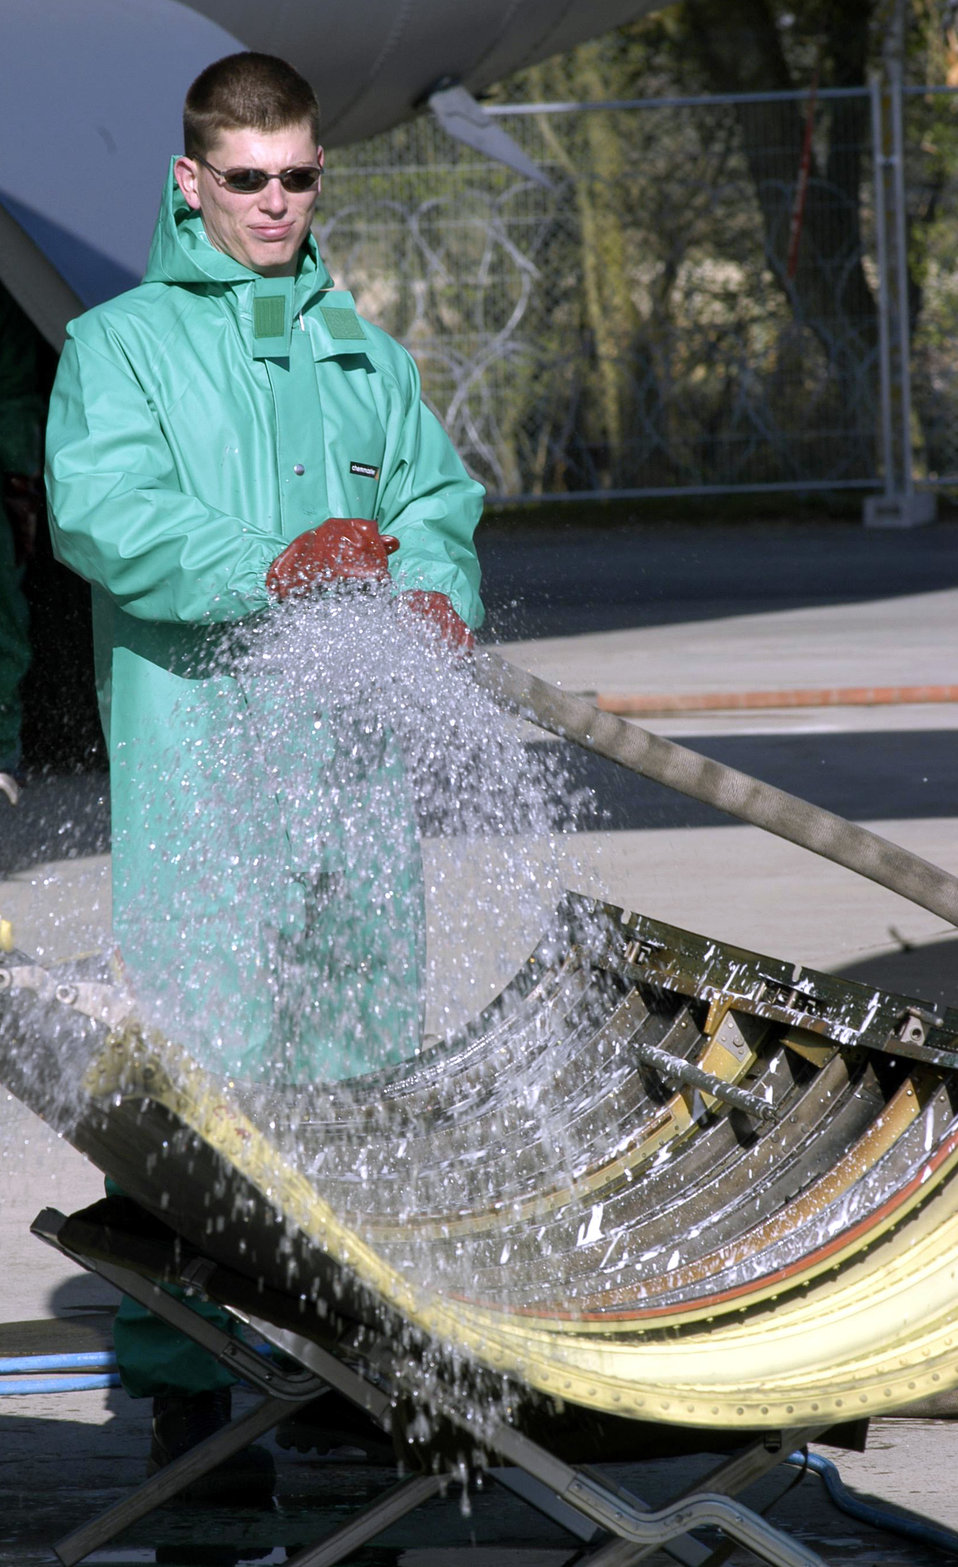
Cleaning the Buff cowling

OPERATION IRAQI FREEDOM -- Airman 1st Class Clint Kruetzbender rinses out the inside of a B-52 Stratofortress engine cowling April 7 at a forward-deployed location. Kruetzbender was one of about a dozen maintainers washing the Buff after 300 hours of flying. The Buff entered the first part of a